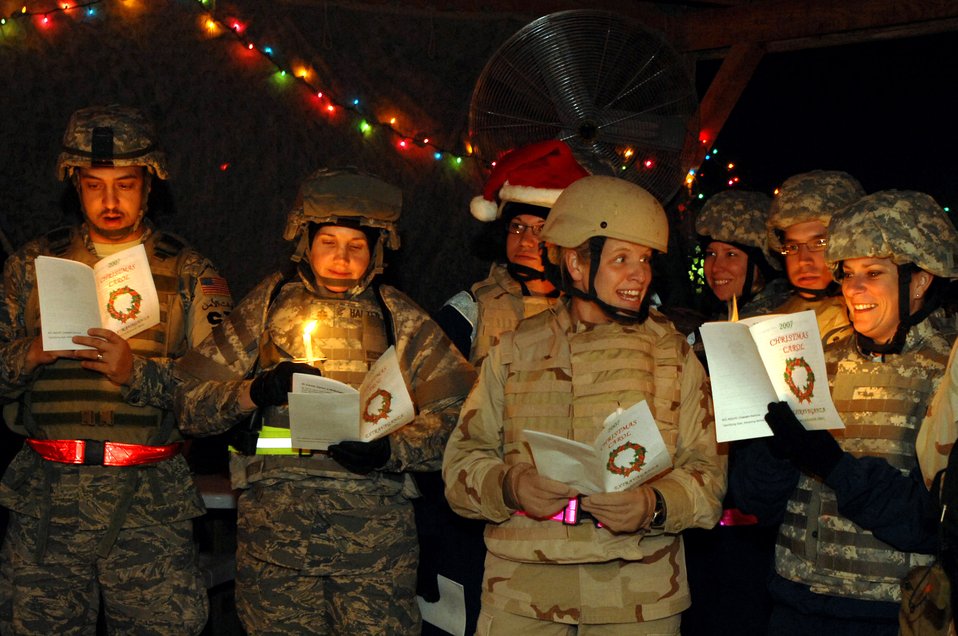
Joy to the world

Airmen of the 407th Air Expeditionary Group at Ali Base, Iraq, sing Christmas songs Dec. 24 during a caroling event hosted by the base chapel. Airmen gathered together on Christmas Eve for a candlelight service, then later sang carols and enjoyed hot chocolate and snacks.